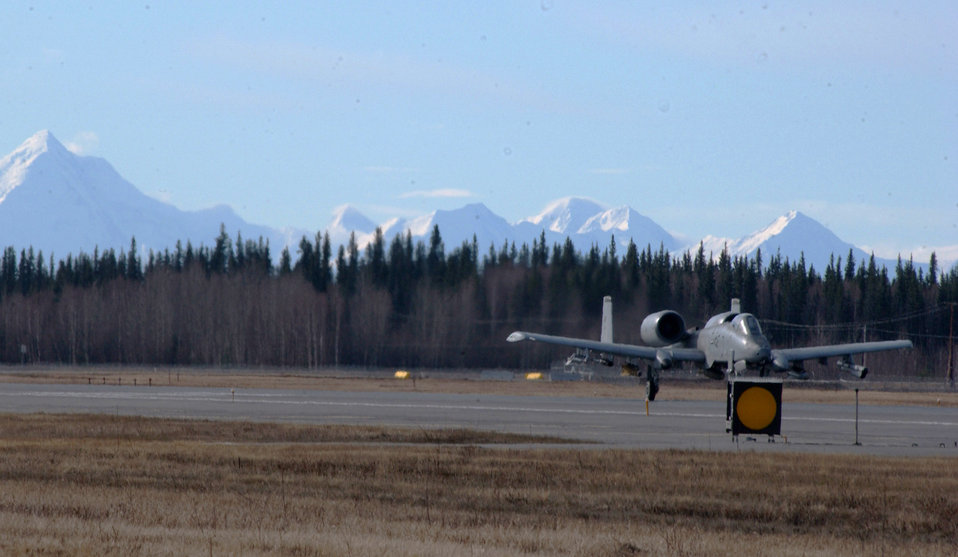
Alaska A-10s are goin' to Georgia

An A-10 Thunderbolt II with the 355th Fighter Squadron prepares to take off on the runway April 24 at Eielson Air Force Base, Alaska. Due to the Base Realignment and Closure list the A-10s are being relocated to Moody AFB, Ga.